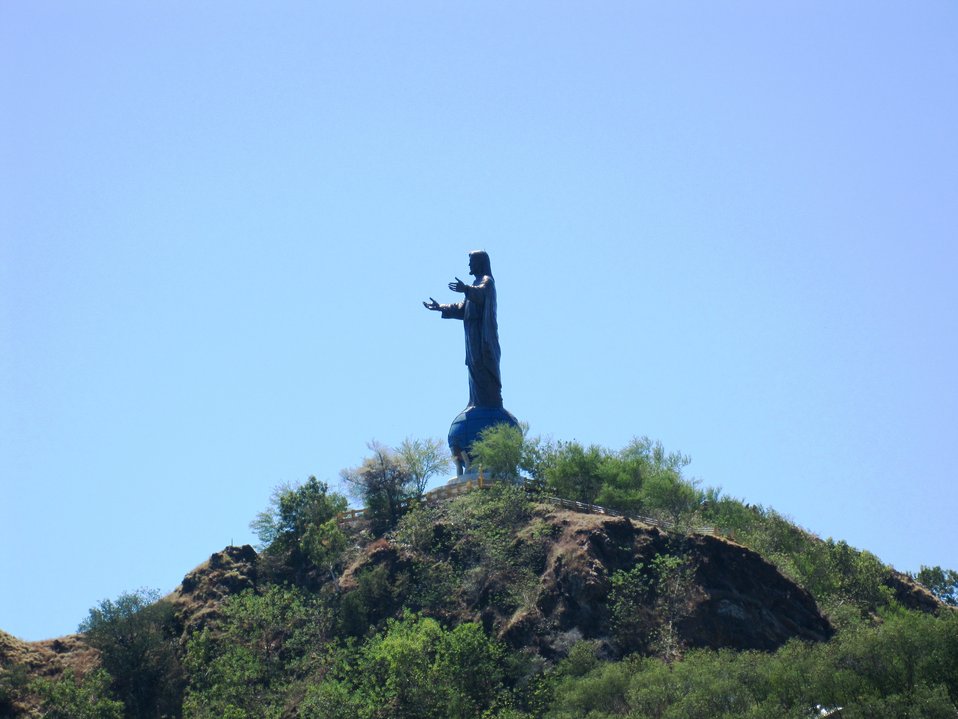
A Statue of Christ the King Overlooks Dili, Timor-Leste

A statue of Christ the King stands on a world globe pedestal atop a hill overlooking the city of Dili, Timor-Leste, in August 2010.